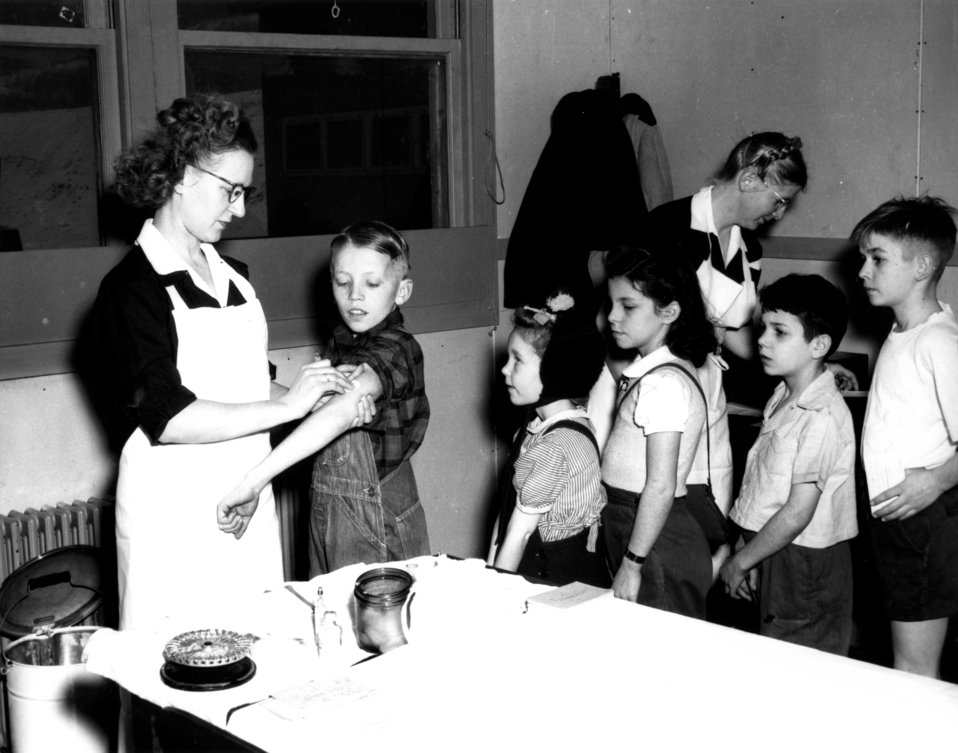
Medical at Oak Ridge